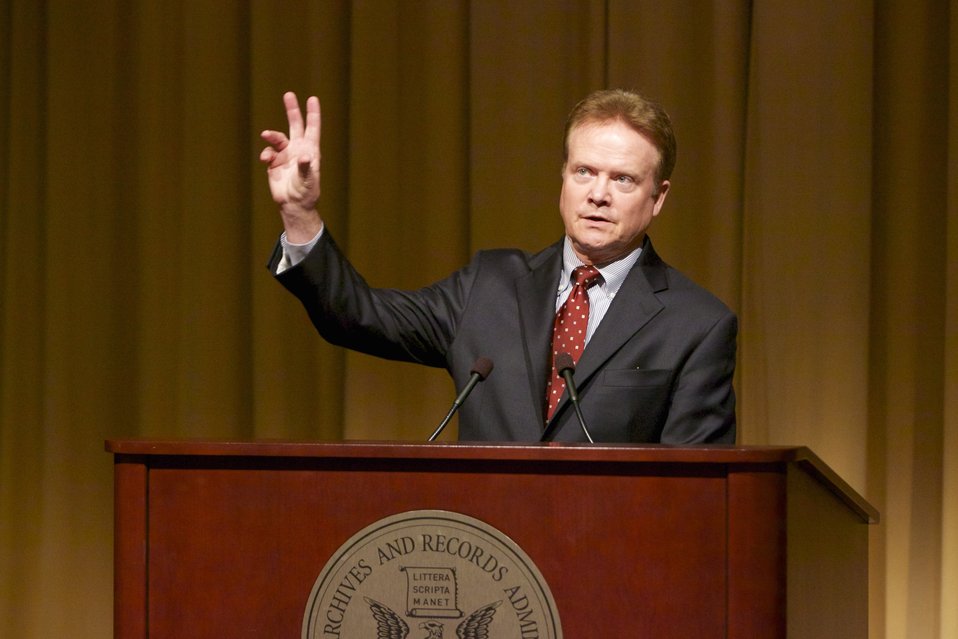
I Heard My Country Calling: A Memoir; James Webb, Former Senator and author, discusses his book